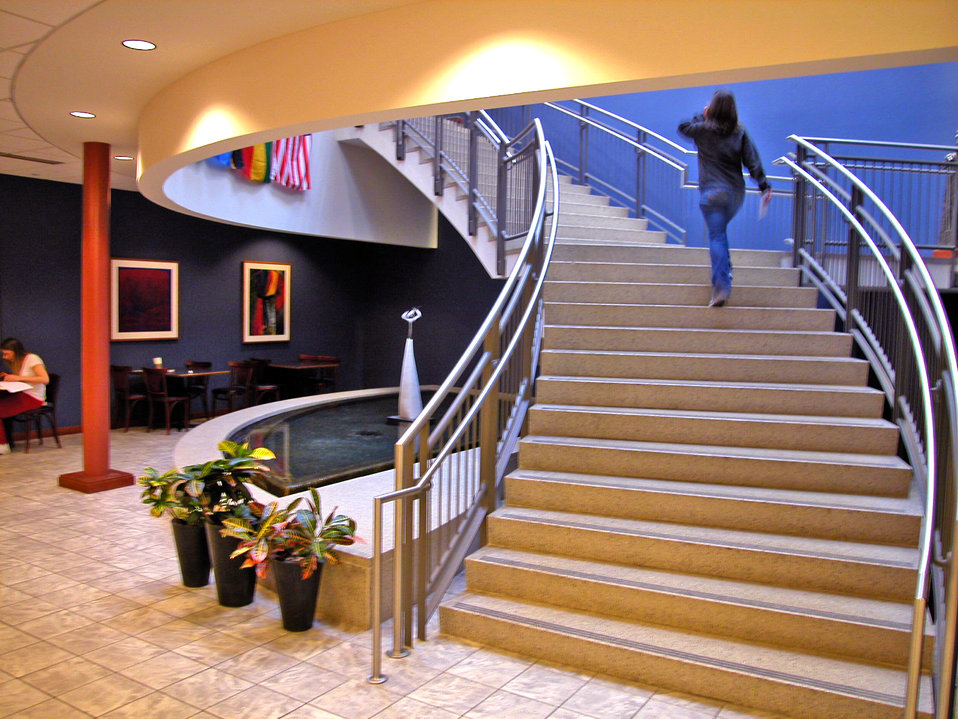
This 2006 photograph depicted a woman as she was ascending a publicly-accessible staircase, which had been designed with consideration for those that were visually-impaired. Note that the underside aspect of this structure had been cordoned off by the inclusion of a fountain-pool, and seating area, in order to prevent the visually-impaired from walking beneath the low-hanging staircase, thereby, avoiding head or bodily injuries. In this way, normally unused, though potentially dangerous walk-through space, was turned into an attractive, and safe amenity. See PHIL# 9048, and 9049 for additional views of this structure.